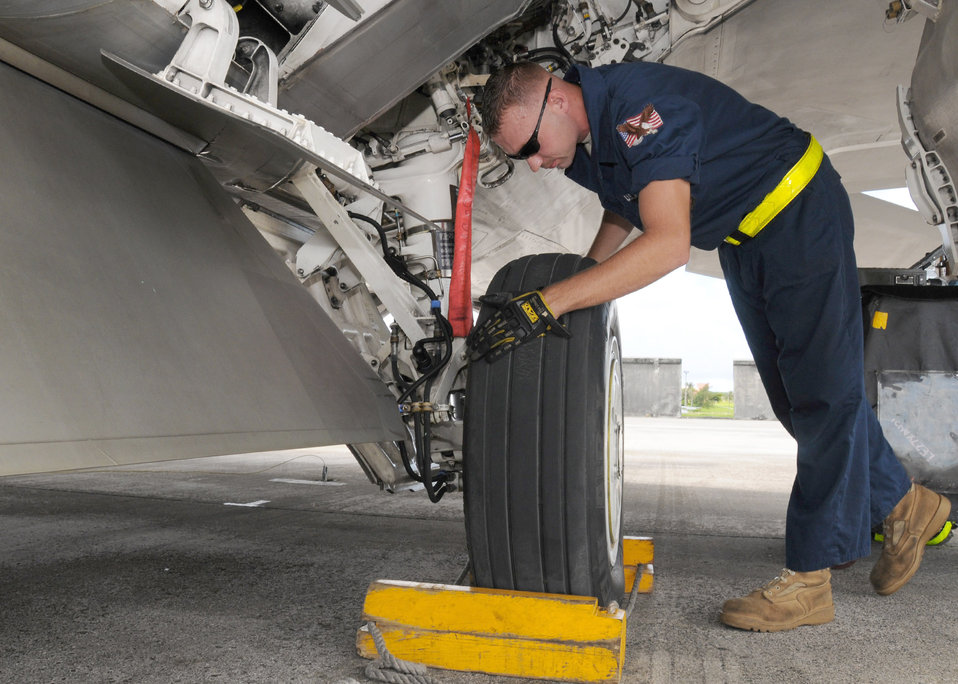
Keep it rolling

Staff Sgt. Jesse Buettner, a crew chief with the 36th Expeditionary Aircraft Maintenance Squadron, conducts a thorough flight inspection Sept. 13, 2010, at Andersen Air Force Base, Guam. Sergeant Buettner is deployed for the Valiant Shield exercise from the 27th Air Maintenance Unit at Langley AFB, Va.